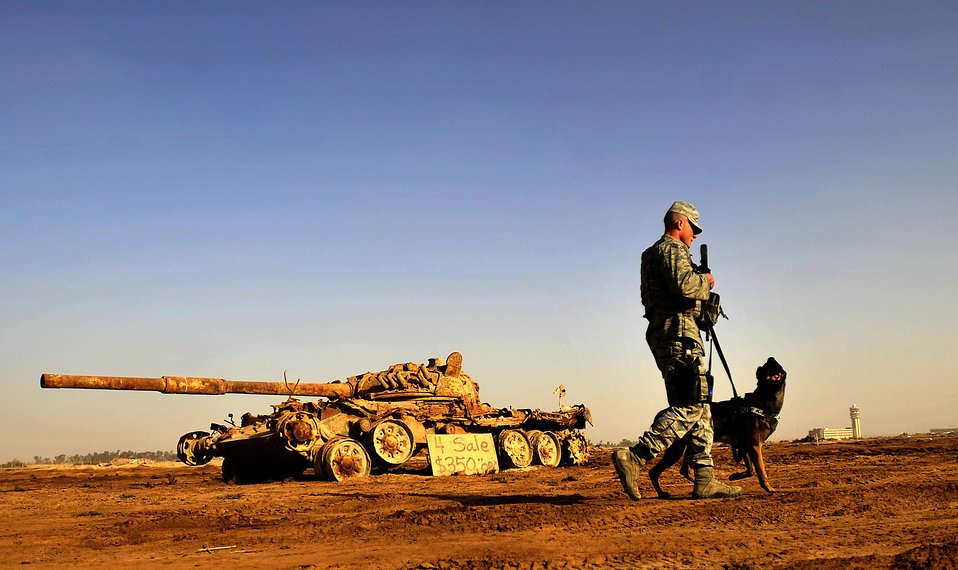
An Airman's Best Wingman

Senior Airman Stephen Hanks, a military working dog handler assigned to the 447th Expeditionary Security Forces Squadron, and Geri, a patrol and explosive detector dog with the 447th ESFS, patrol the perimeter of Sather Air Base in Baghdad, Iraq, Dec. 11, 2011. For the last six months Geri and Hanks, have been supporting Operation New Dawn by providing explosive and psychological deterrence. Hanks and Geri are deployed from Patrick Air Force Base, Fla. Hanks is from Amherst, Mass.